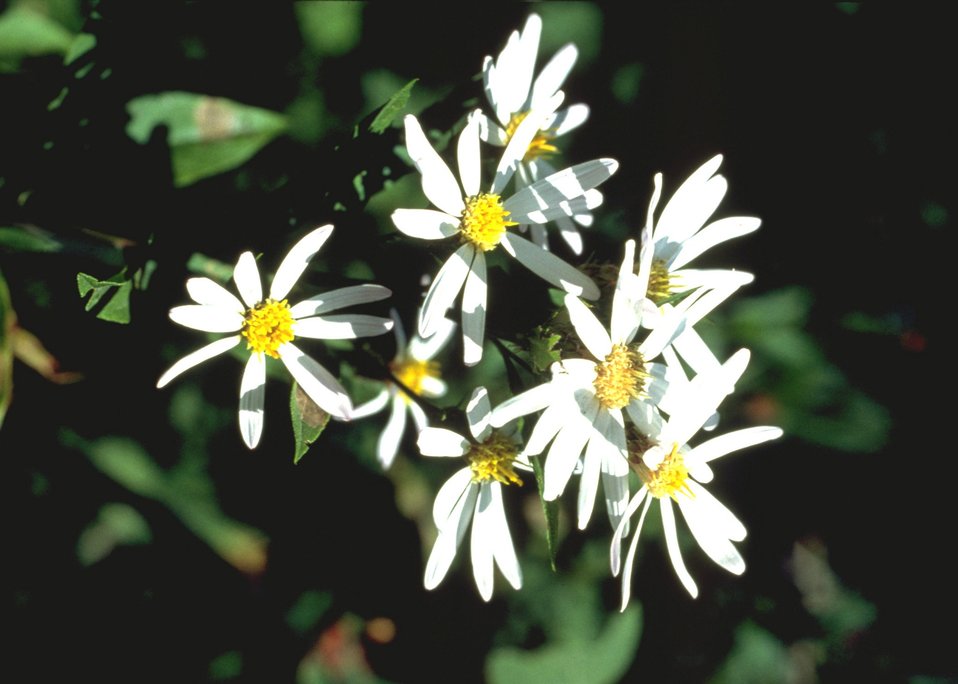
Flat-topped white aster flowers.